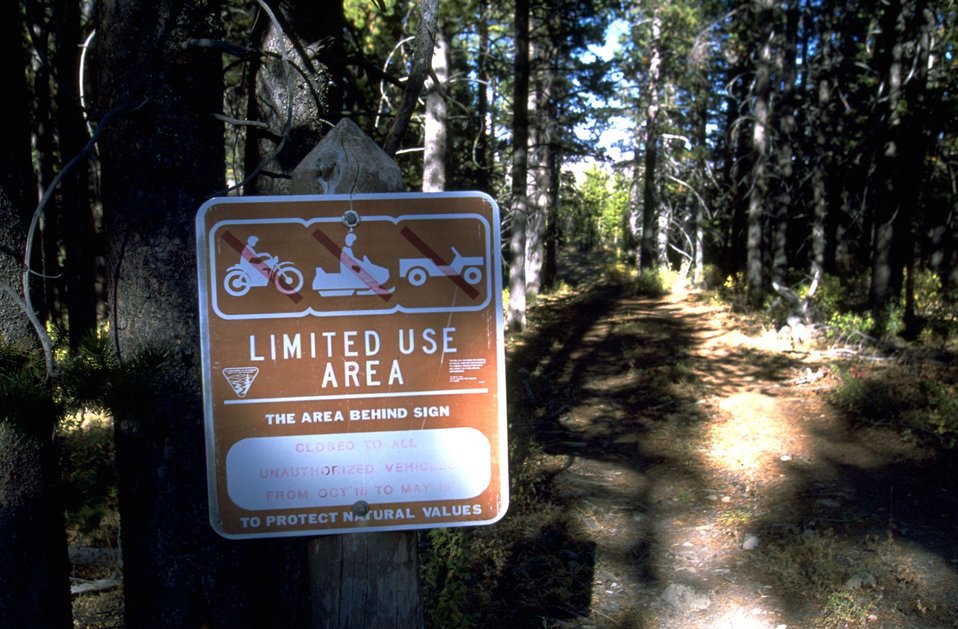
Travel Management (Limited Use) sign in a forest setting